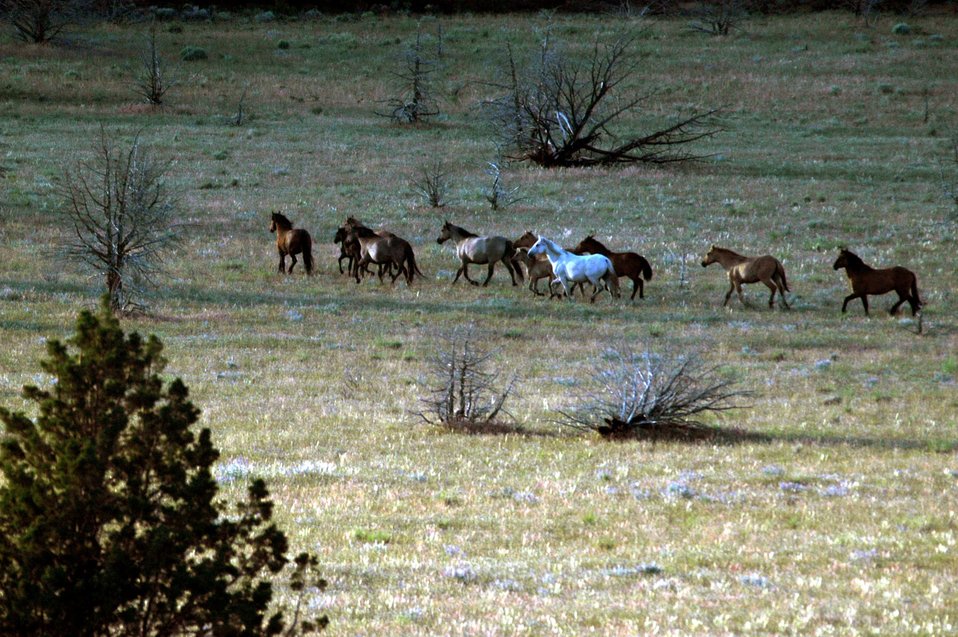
Kiger horses roam the plateaus of the Kiger Wildhorse Herd Management Area near Steens Mountain in Southeastern Oregon.